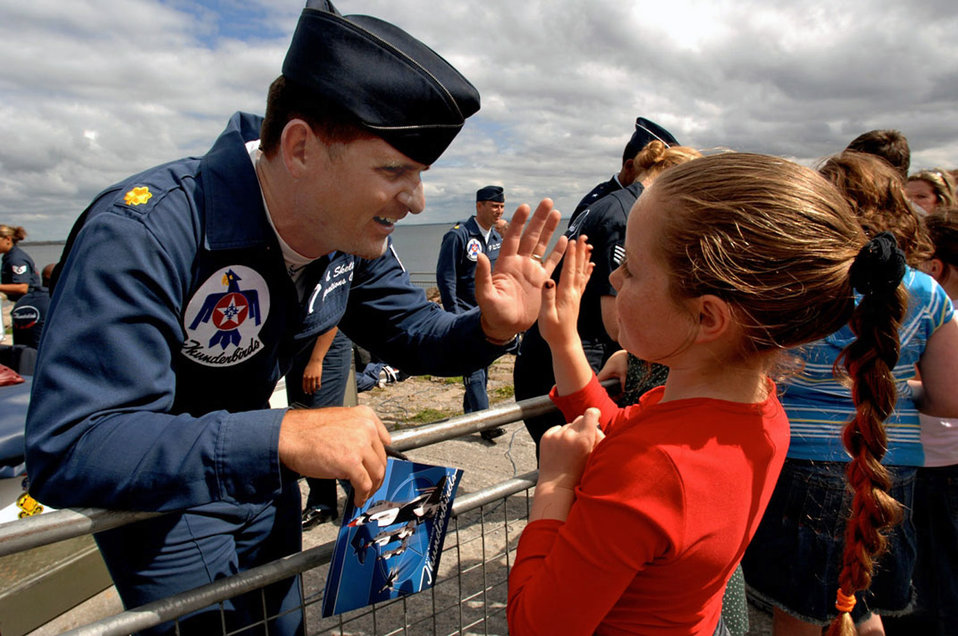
Thunderbirds spread goodwill in Europe

Maj. Rob Skelton, the Air Force Thunderbirds operations officer, greets a young girl at the Salthill Air Show in Galway, Ireland, June 24. This was the first time the Thunderbirds performed over Irish soil. More than 100,000 people attended the air show.